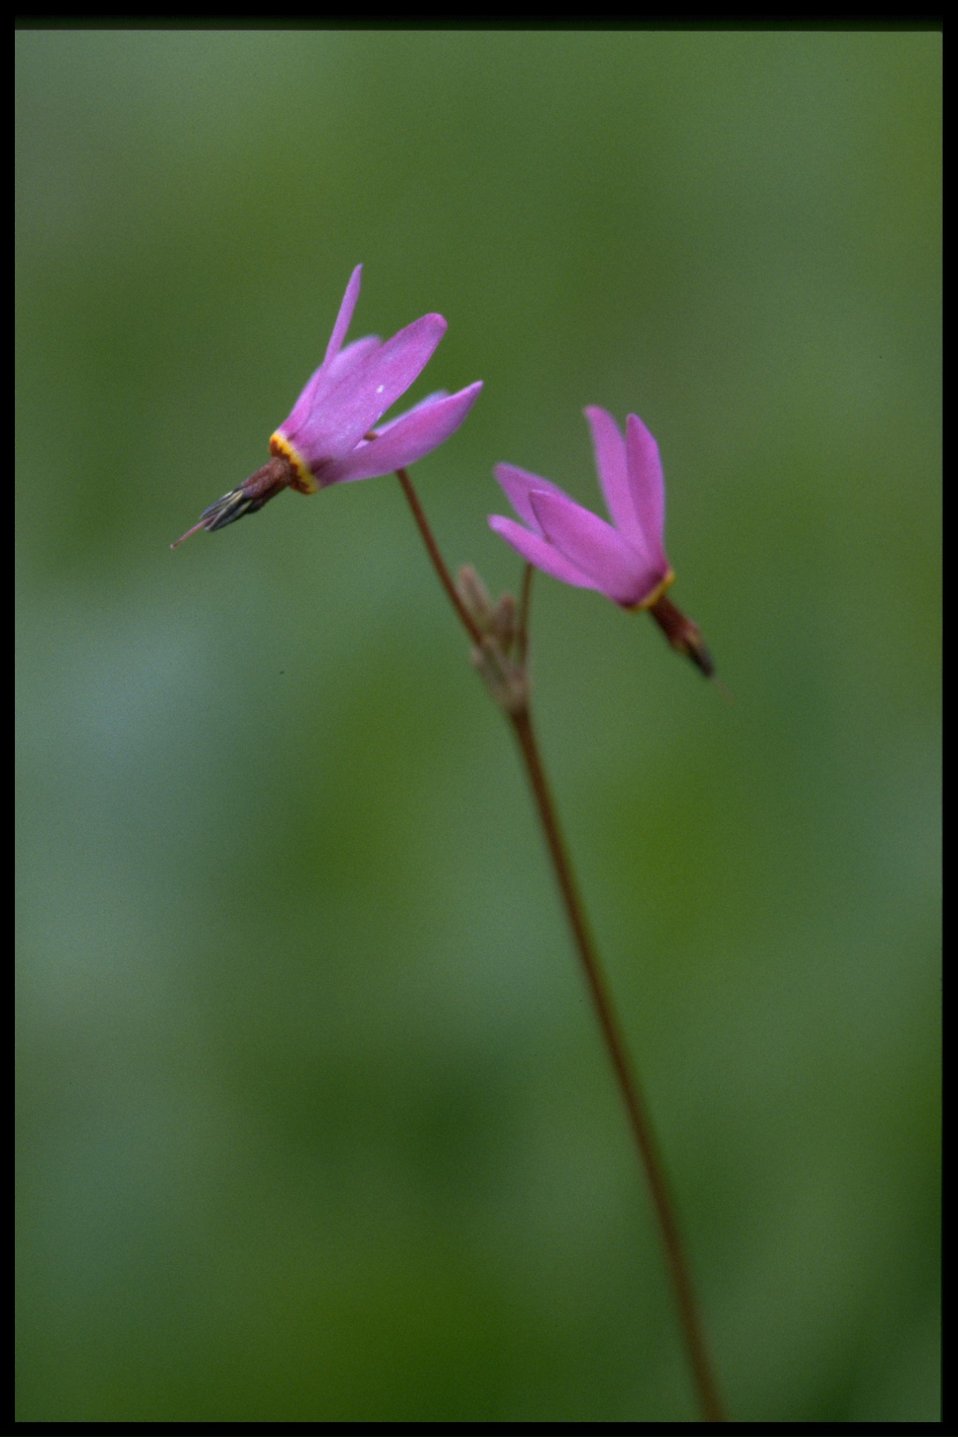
Medium shot of bonneville shootingstar (Dodecatheon conjugens).